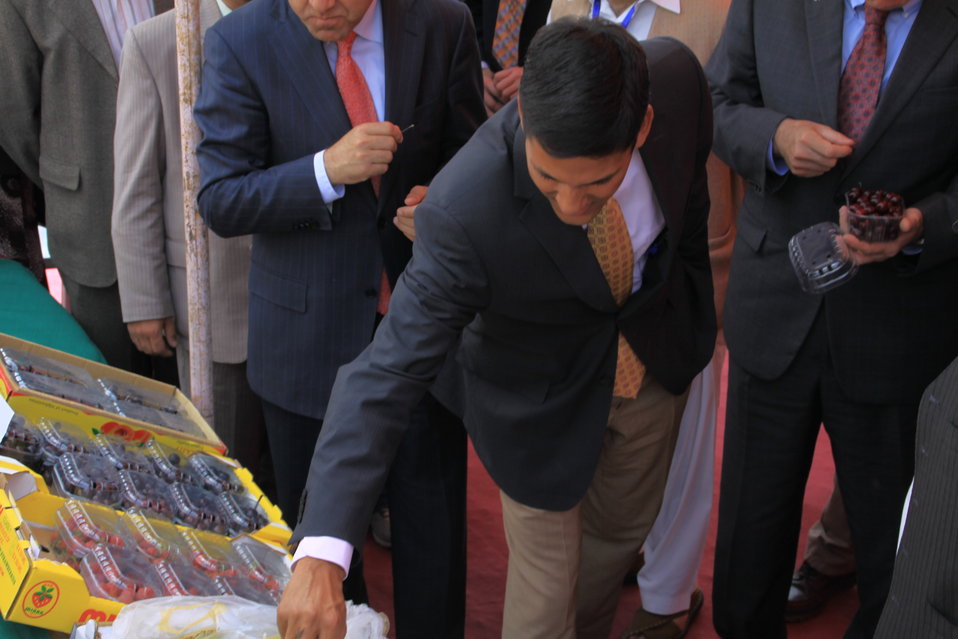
Badam Bagh Farm